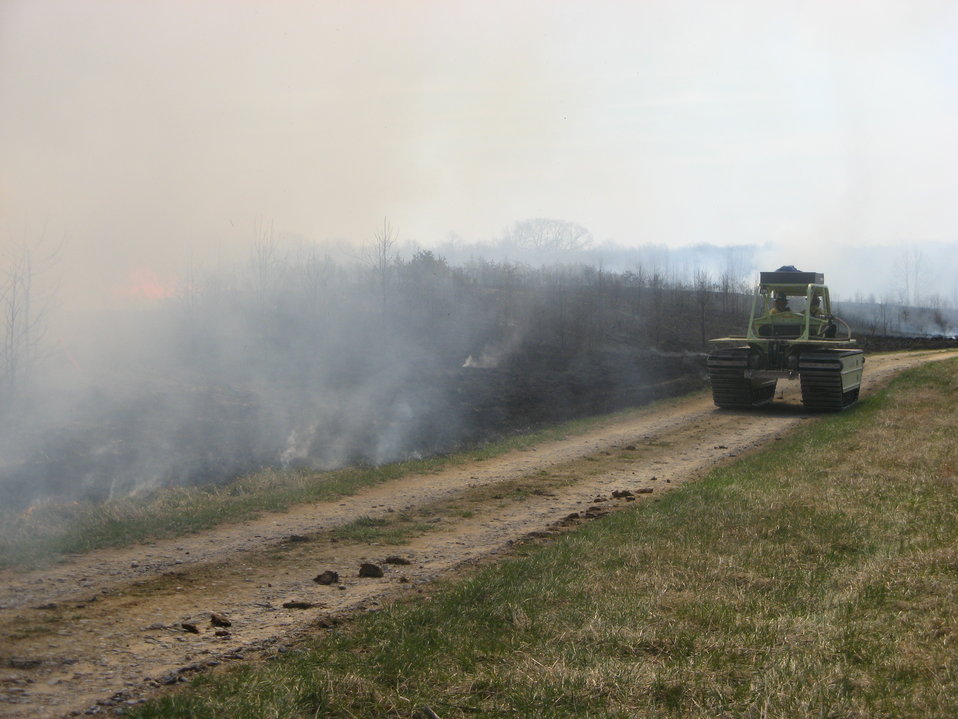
Marshmaster drives along fire line

Laurel, MD: A Marshmaster drives along a road bordering a controlled burn. This tracked vehicle can be used in wet areas to minimize soil impacts.